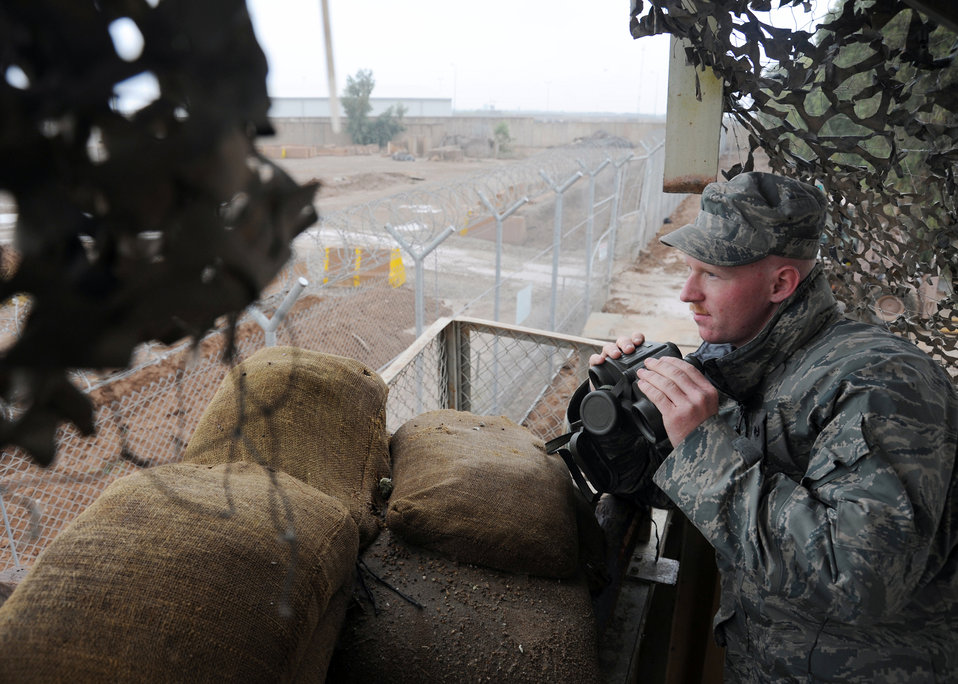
Force protection Airmen add another layer of armor in base defense

Senior Airman Kurtis Yeisley watches local nationals work in the gravel yard Nov. 19, 2009 at Joint Base Balad, Iraq. Airmen deployed as TCN escorts protect resources while providing safety and security on Joint Base Balad. Airman Yeisley is an 332nd Expeditionary Civil Engineer Squadron third country national escort.